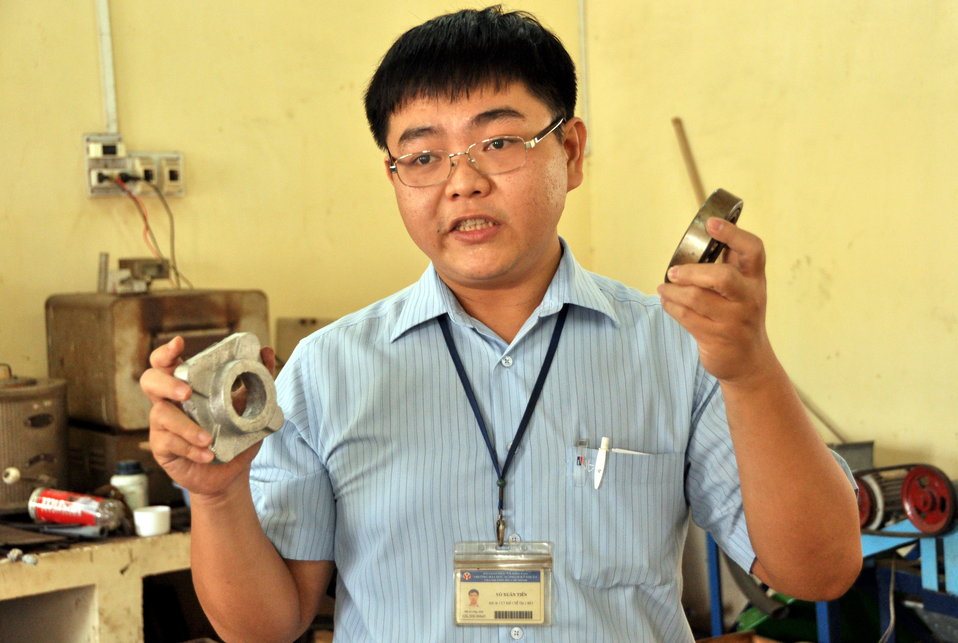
Ho Chi Minh City University of Technical Education, HEEAP Partner

Lecturer Vo Xuan Tien
January 12, 2013